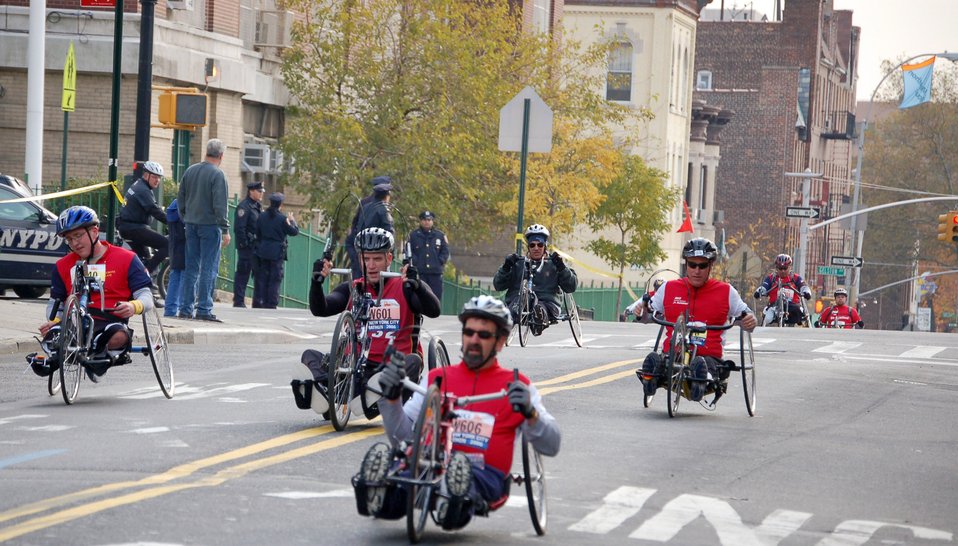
Veterans take on the New York City Marathon

Disabled veterans, members of the Achilles Freedom Team, crest a hill during the New York City Marathon Nov. 5. Nearly 50 veterans participated in the marathon as Achilles' wounded warriors.